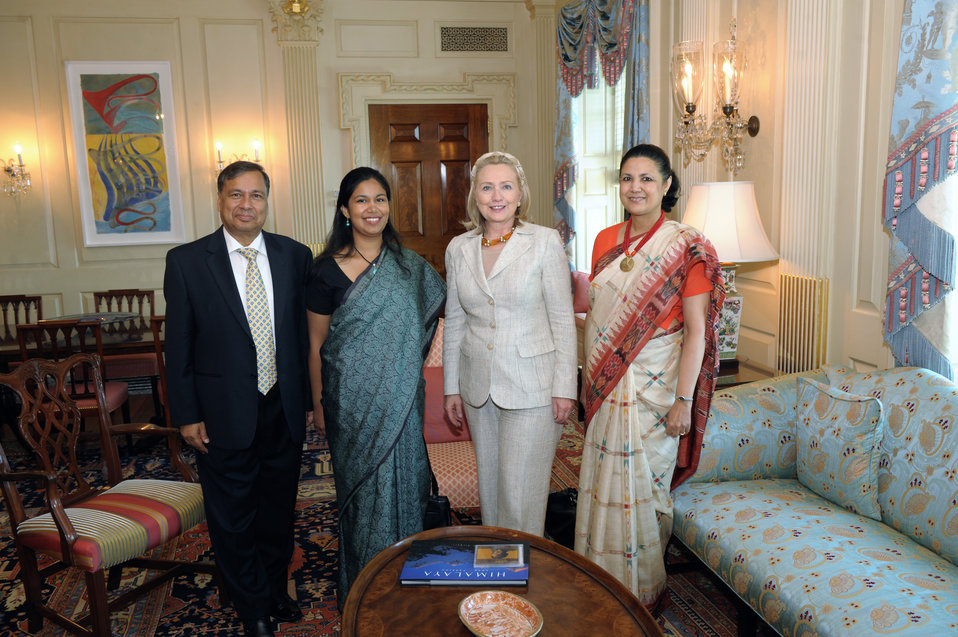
Secretary Clinton Meets With Indian Ambassador Shankar

U.S. Secretary of State Hillary Rodham Clinton, second from right, meets with Indian Ambassador the U.S. Meera Shankar, right, at the U.S. Department of State in Washington, D.C., on July 27, 2011.